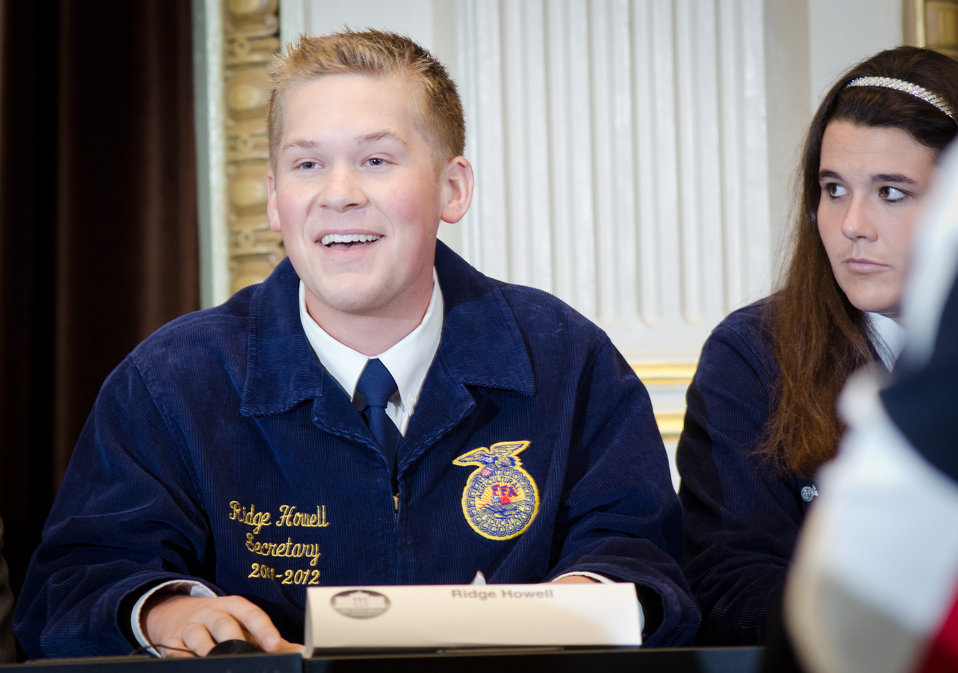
FFA State Secretary and Youth Champions of Change panelist Ridge Howell speaks during the Champions of Change Recognition event in the Indian Treaty Room of the Executive Office Building in Washington, D.C. on Tuesday, Oct. 9, 2012. The Champions of Change program was created to honor ordinary Americans doing great work in their communities. Each week, a different sector is highlighted and groups of Champions, ranging from educators, entrepreneurs and community leaders, are recognized for the work they are doing to serve and strengthen their communities.